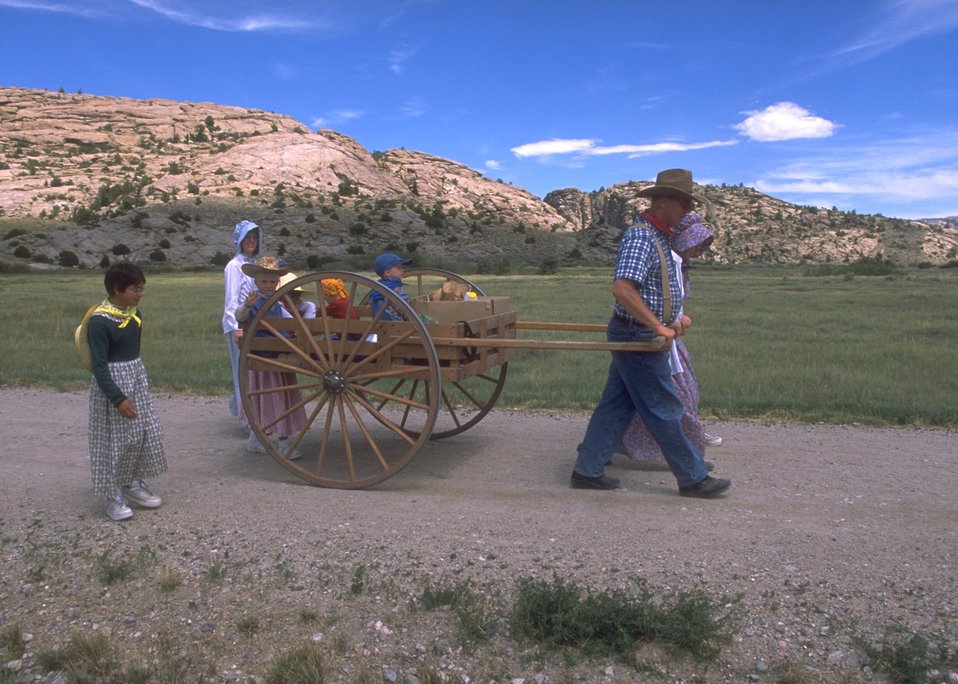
Handcart re-enactment on the Mormon Trail between Devil's Gate and Martin's Cove, Rawlins Field Office.